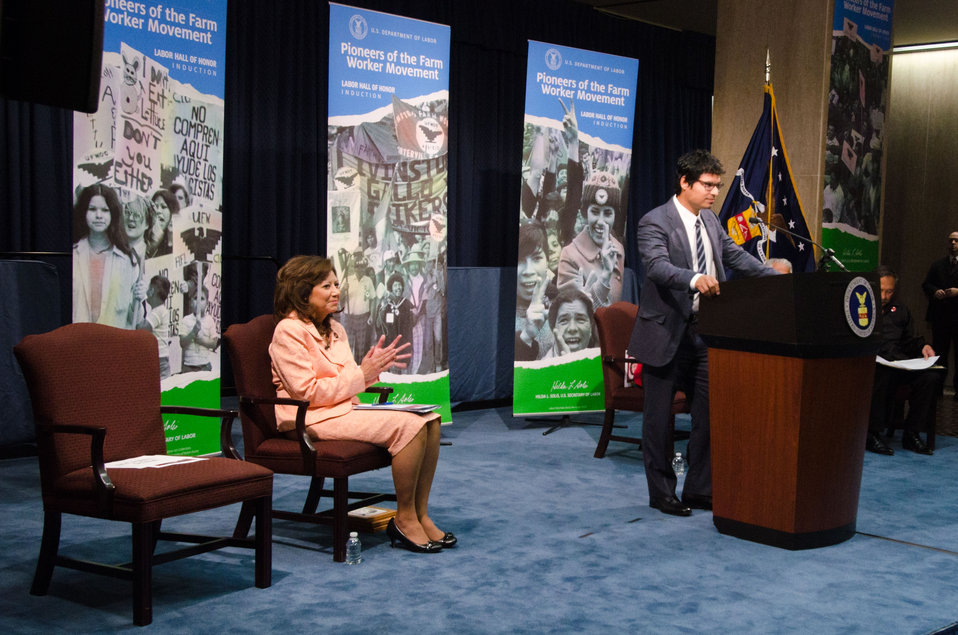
Michael Pena the actor who will be portraying Cesar Chavez in a biography about the farm workers rights activist was the Master of Ceremonies at the dedication of the Cesar E. Chavez Memorial Auditorium at the United States Department of Labor in Washington, D.C., Monday, March 26, 2012.